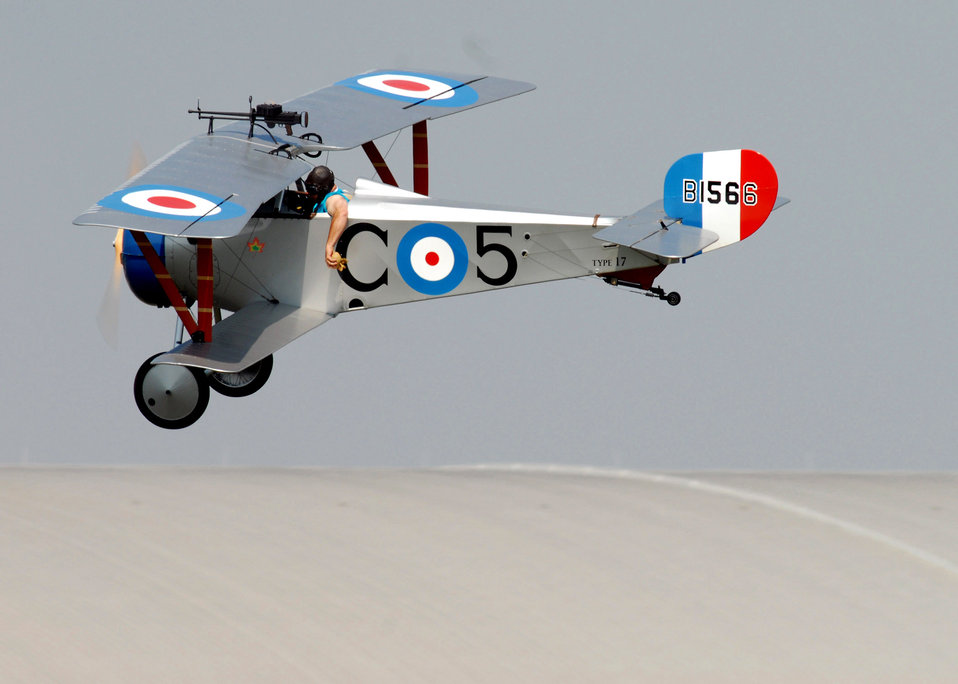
World War 1 Fly In

A pilot prepares to drop his